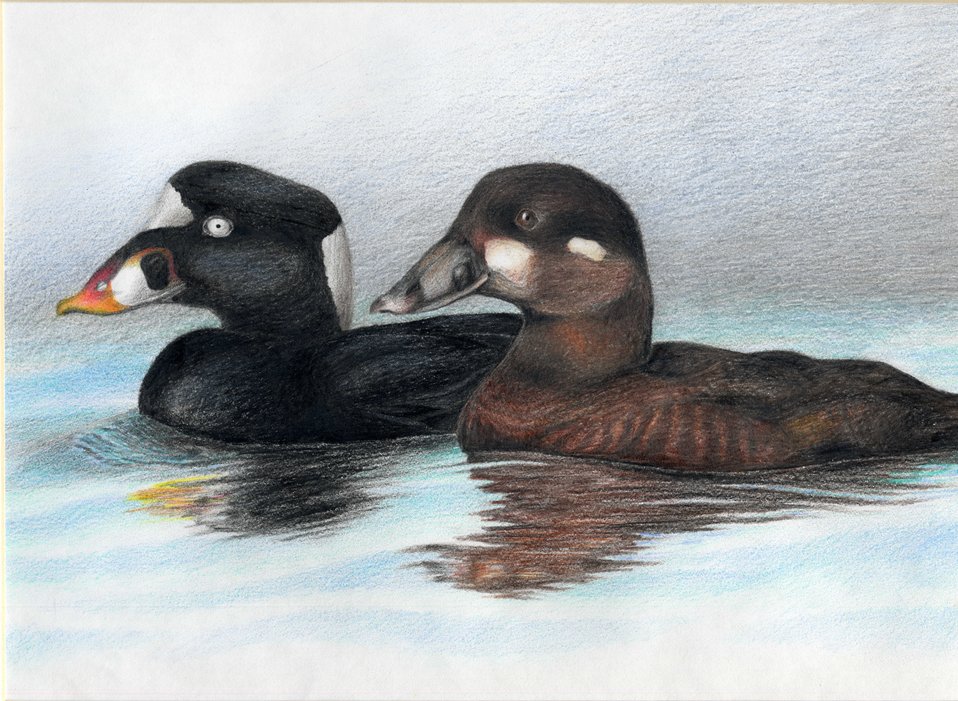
Wisconsin

2012 Jr Duck Stamp Program
State Best of Show
Wisconsin